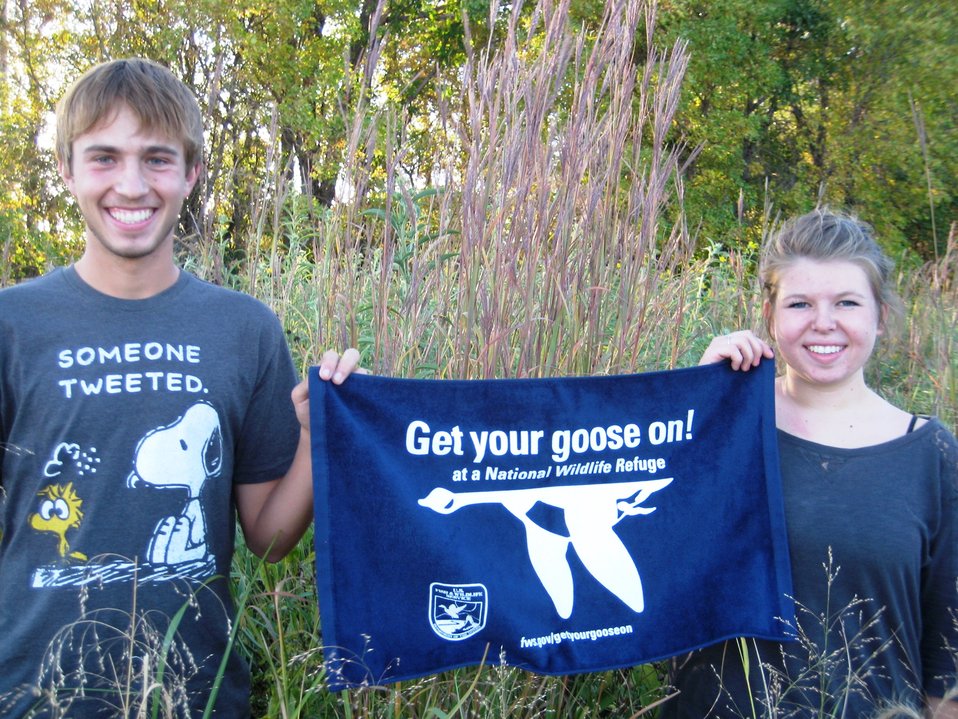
Get Your Goose On!

Taken at Tewaukon National Wildlife Refuge.